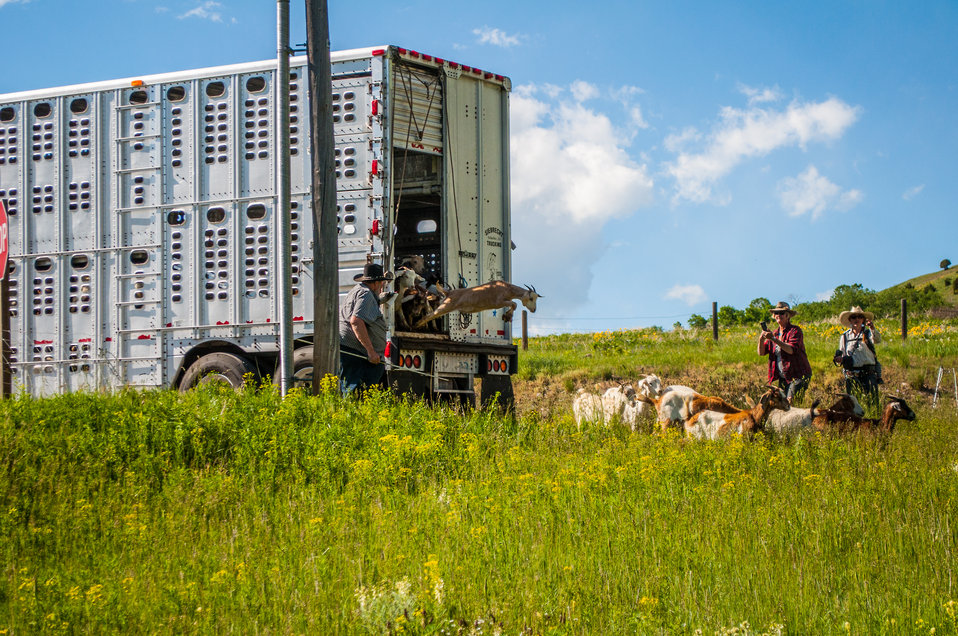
Goat landing on Bozeman Fish Technology Center

On June 8 at 5:00 p.m., 409 yearling domestic goats were off-loaded on the Bozeman Fish Technology Center (BFTC) campus. Thus begins a 3-4 year project of monitored targeted grazing and applications of friendly insects to control noxious weeds and manage brush overgrowth on property of the U.S. Fish and Wildlife Service BFTC.

Purposes of this effort are to reduce the presence of undesirable vegetation, promote restoration of native plants, and assist with fire protection by reducing burnable plant biomass.

The cooperative venture involves the U.S. Fish and Wildlife Service, Montana Outdoor Science School, Friends of the Bozeman Fish Technology Center, Gallatin Valley Land Trust, U.S. Forest Service, and Prescriptive Livestock Services. Integrated Weed Control is supplying the insects as an in-kind contribution to the project, and has applied insects on the BFTC’s 'hot spots' in previous years.